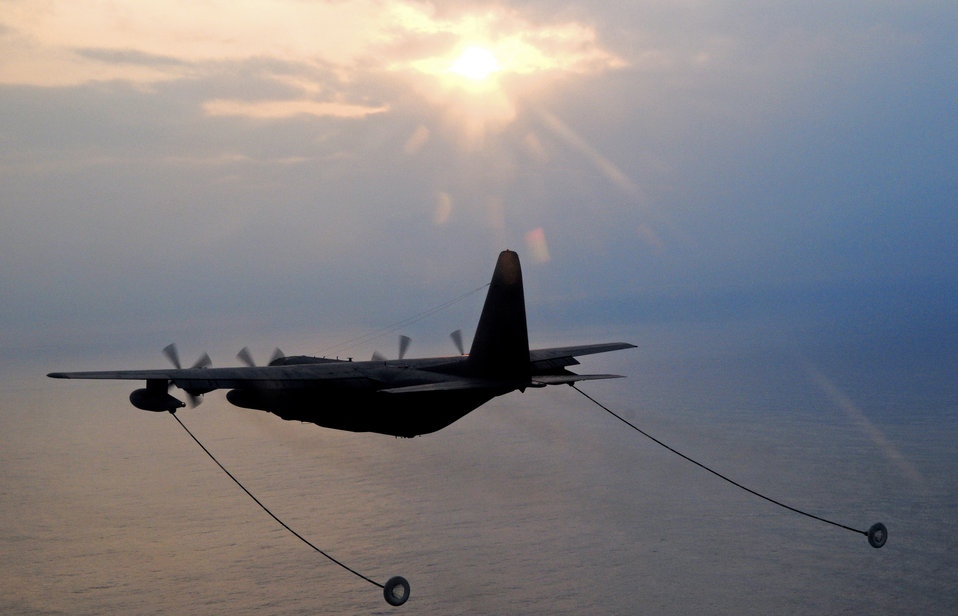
Helicopter pilots train Japanese forces on air refueling

An MC-130 prepares to refuel helicopters during a three-day intensive air refueling course March 24 at Kadena Air Base, Japan.